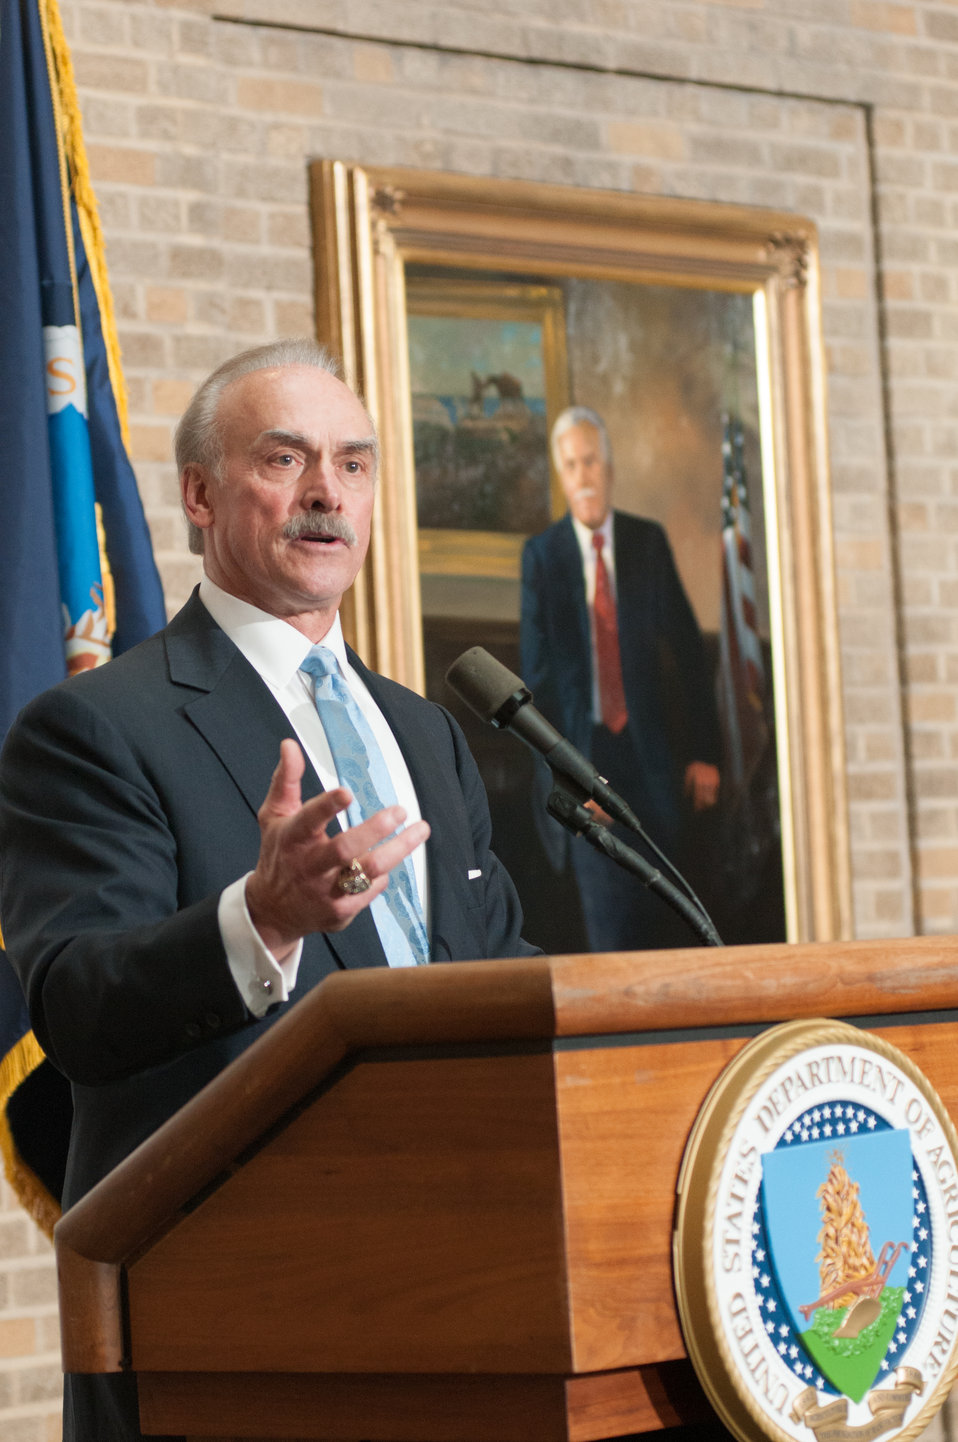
Keynote speaker and former National Football League Pittsburgh Steelers halfback Robert Patrick 'Rocky' Bleier spoke about the importance of milk in his childhood growth, and recounted some of his historic game-winning football play, during a luncheon with dairy producers, Dairy Management, Inc., (DMI) and other stakeholders from the dairy producers industry, at the Whitten Building Patio, in Washington, D.C. on Tuesday, Feb. 26, 2013.